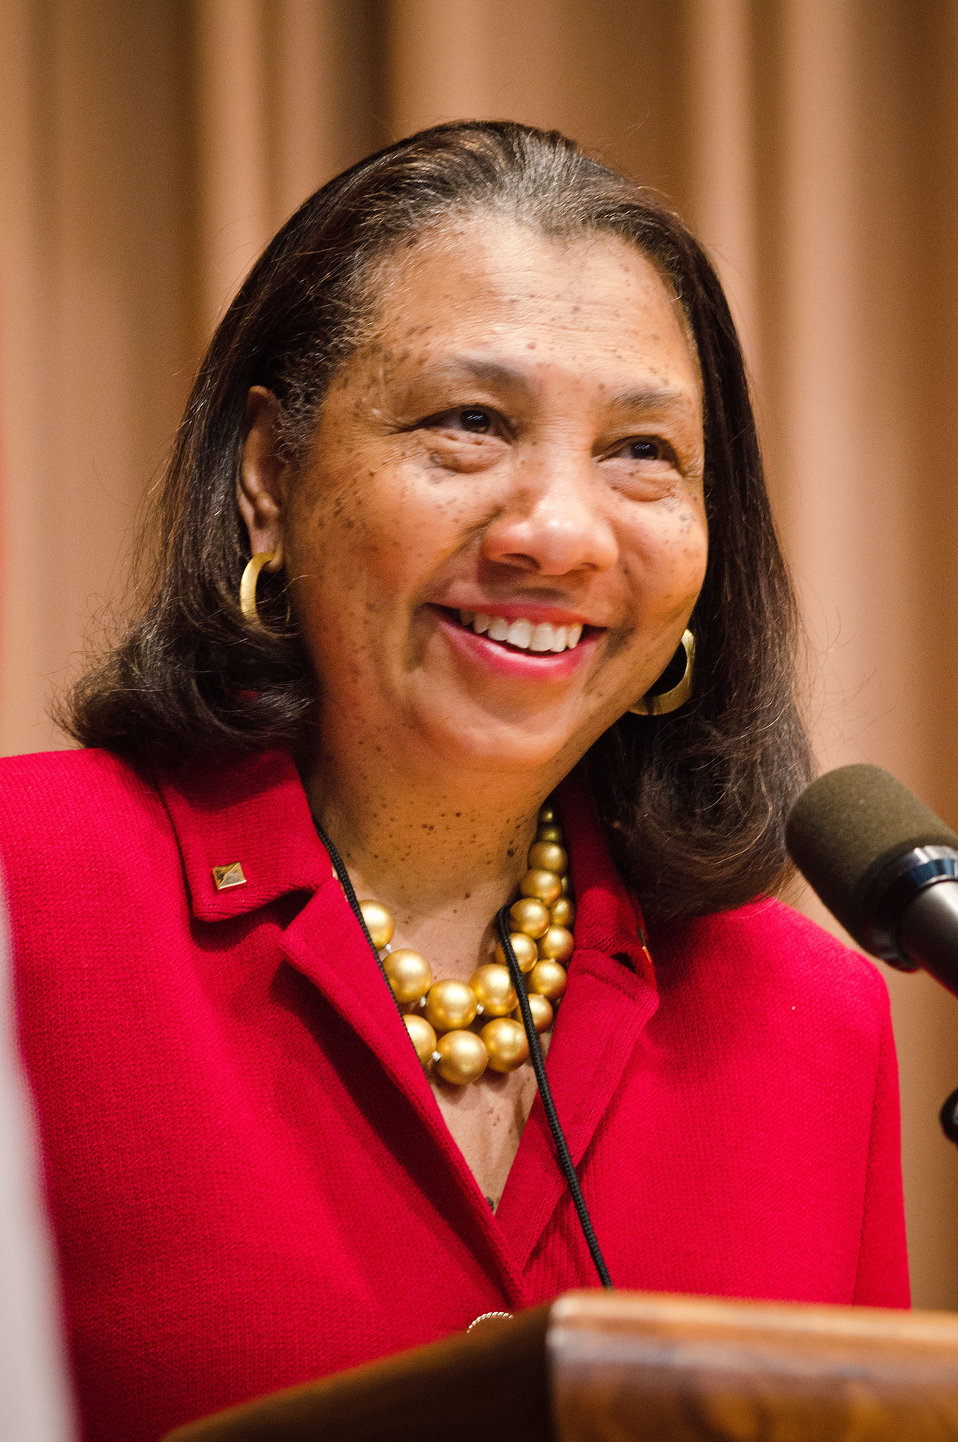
Dr. Alma Hobbs, Associate Assistant Secretary for Administration offered closing remarks at the 2012 Women’s History Month Celebration, “Women’s Education – Women’s Empowerment” held at the United States Department of Agriculture on Thursday, March 8, 2012 in Washington, D.C.